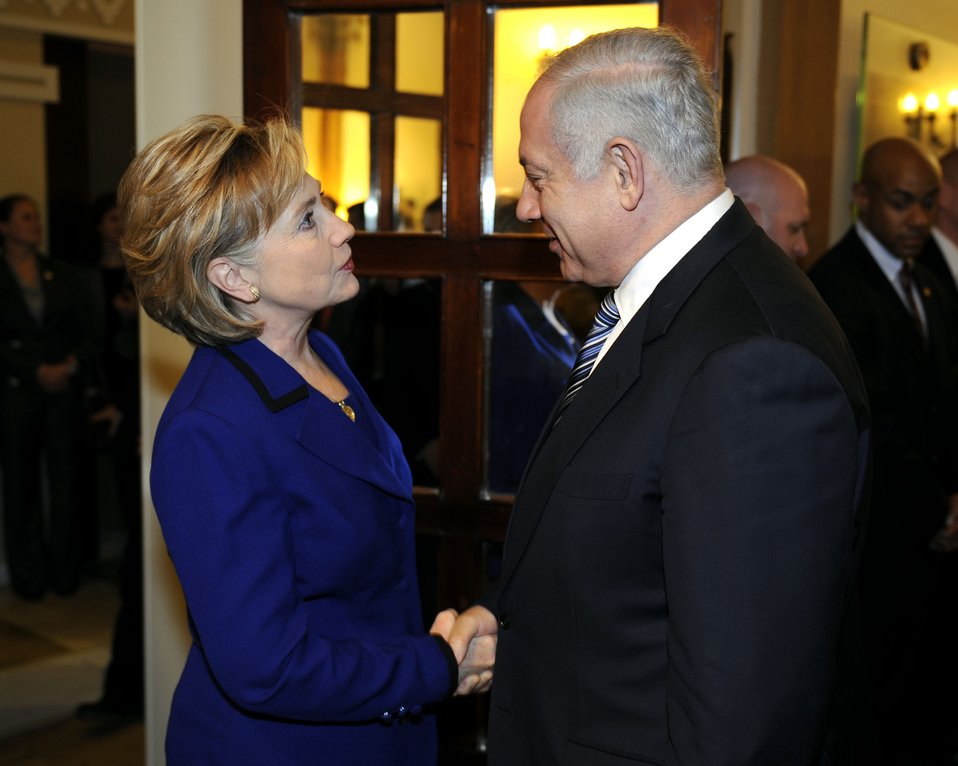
Secretary Clinton before her meeting with Israeli Prime Minister-Designate Benyamin Netanyahu at the King David Hotel, Jerusalem March 3, 2009.